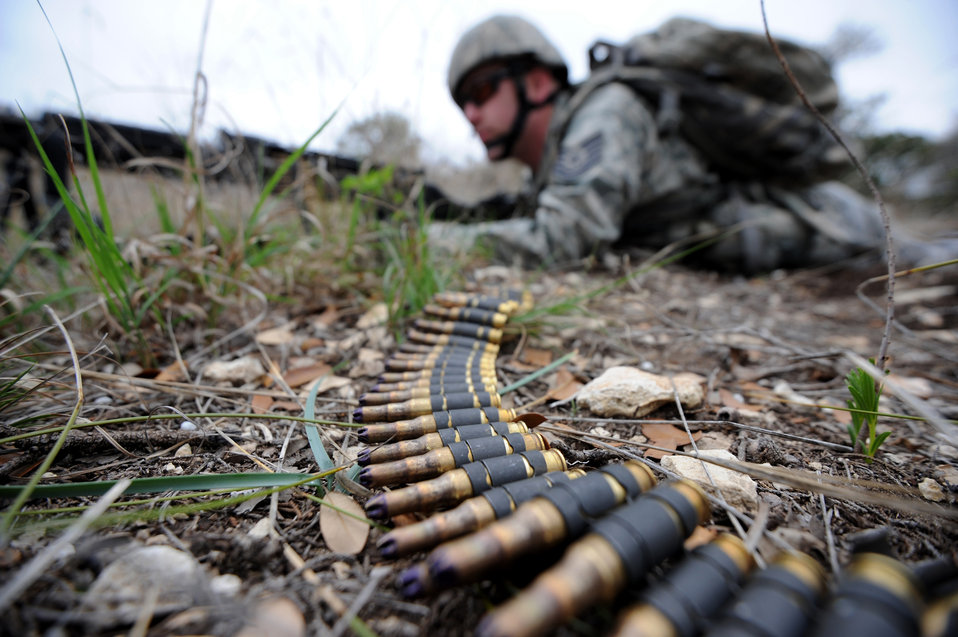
Securing the perimeter

Tech. Sgt. Benjamin Watrous provides perimeter security using an M-240 machine gun, while his team conducts a reconnaissance mission March 17, 2011, during a combat leaders course at Camp Bullis, Texas. Watrous is assigned to the 100th Security Forces Squadron at Royal Air Force Mildenhall, England.